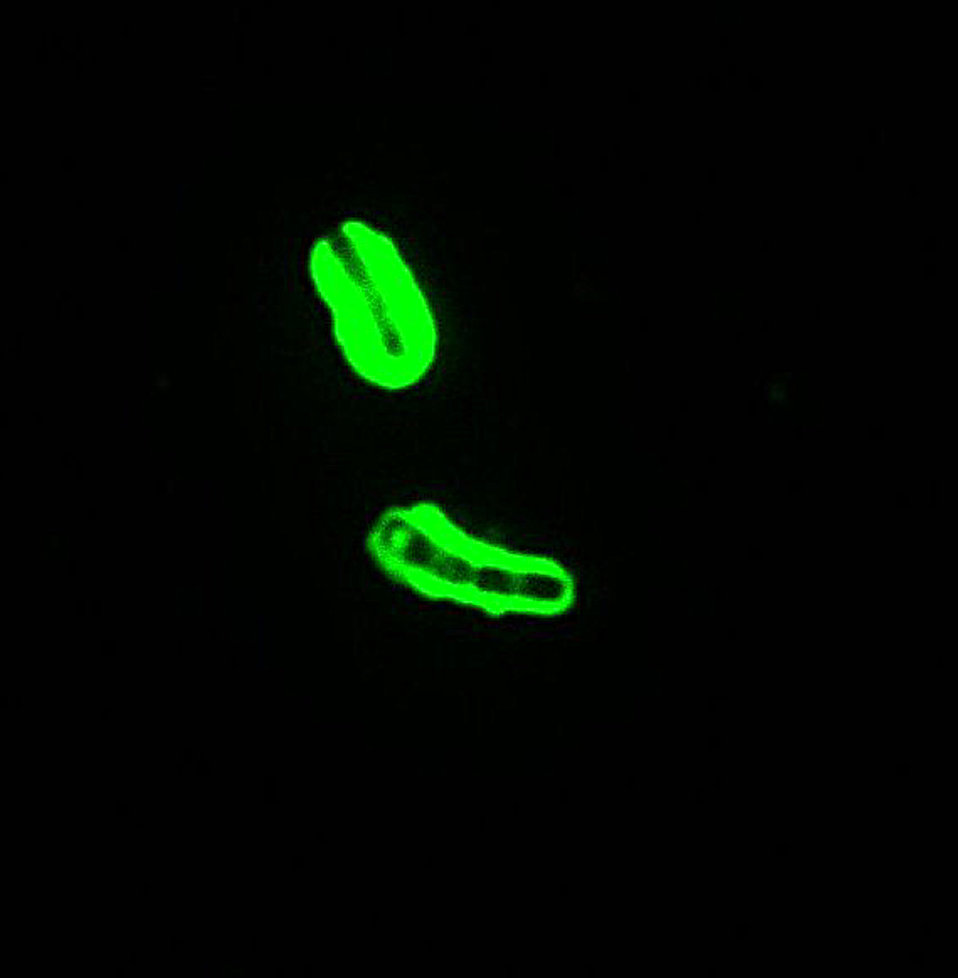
B. anthracis Direct Fluorescent Antibody (DFA) capsule stain.